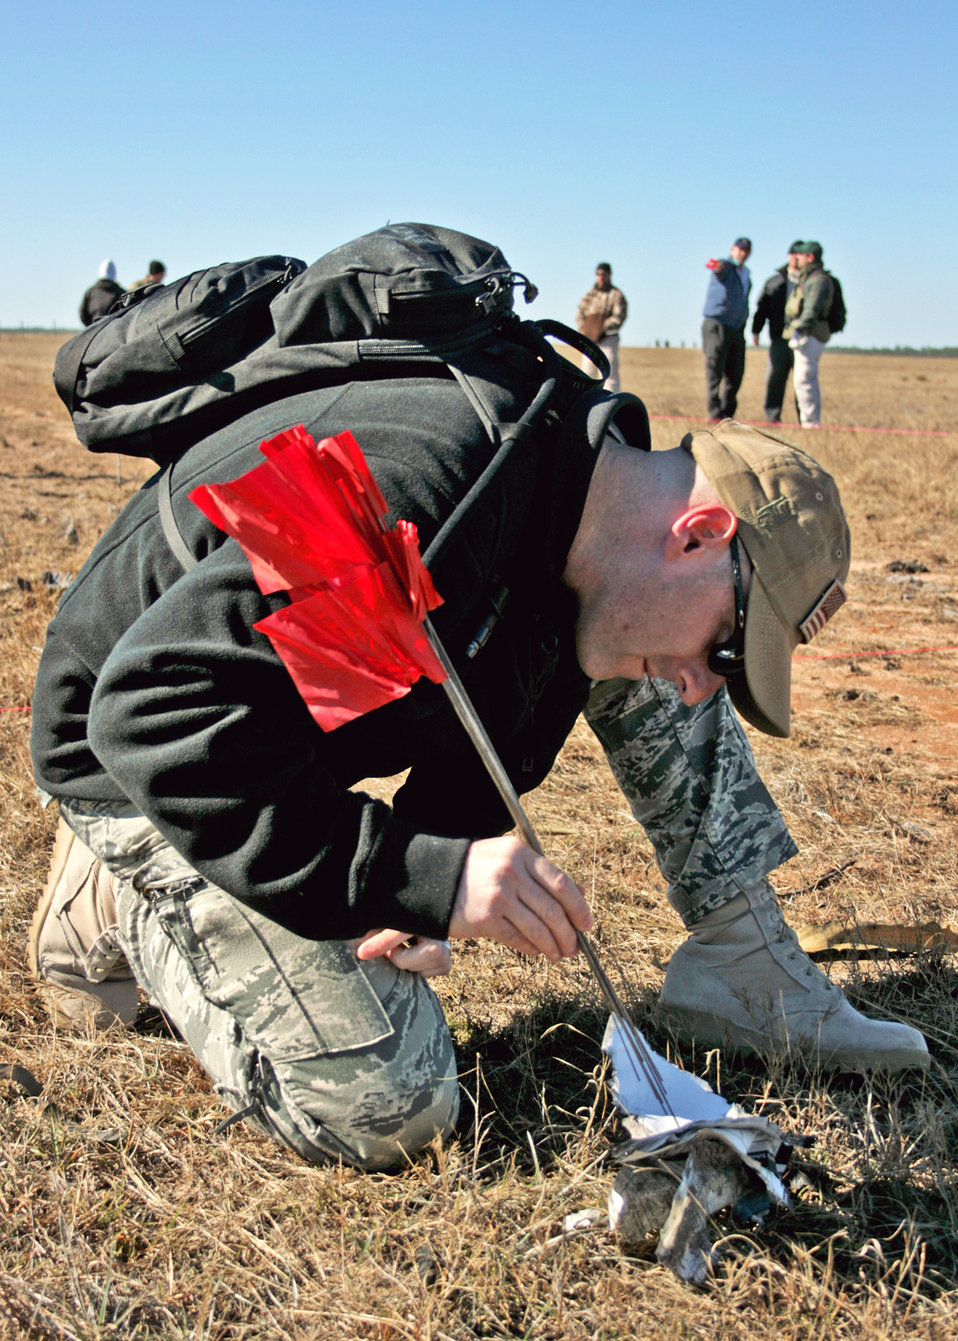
FBI training at Eglin

Tech. Sgt. James Fleming discovers a key piece of evidence during the investigation of a created crime scene Dec. 1, 2010, at Eglin Air Force Base, Fla. The investigations were part of the FBI's Large Vehicle Post-Blast School attended by state and local law enforcement agencies as well as Marine and Air Force explosive ordnance disposal technicians. Sergeant Flemings is a 1st Special Operations Civil Engineer Squadron EOD technician.